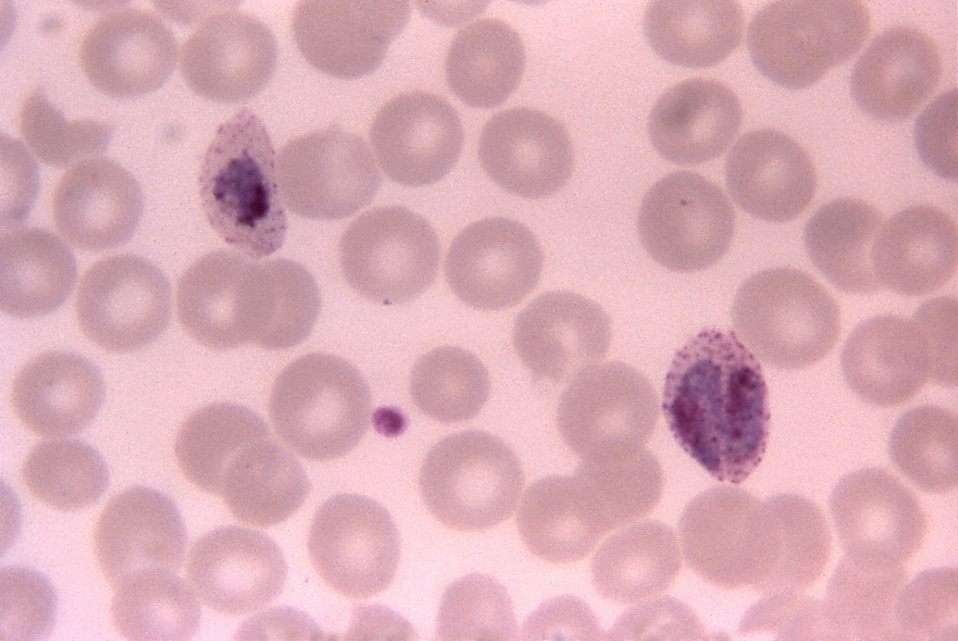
This thin film slide shows a doubly-infected oval RBC growing two P. ovale trophozoites and a single growing trophozoite.